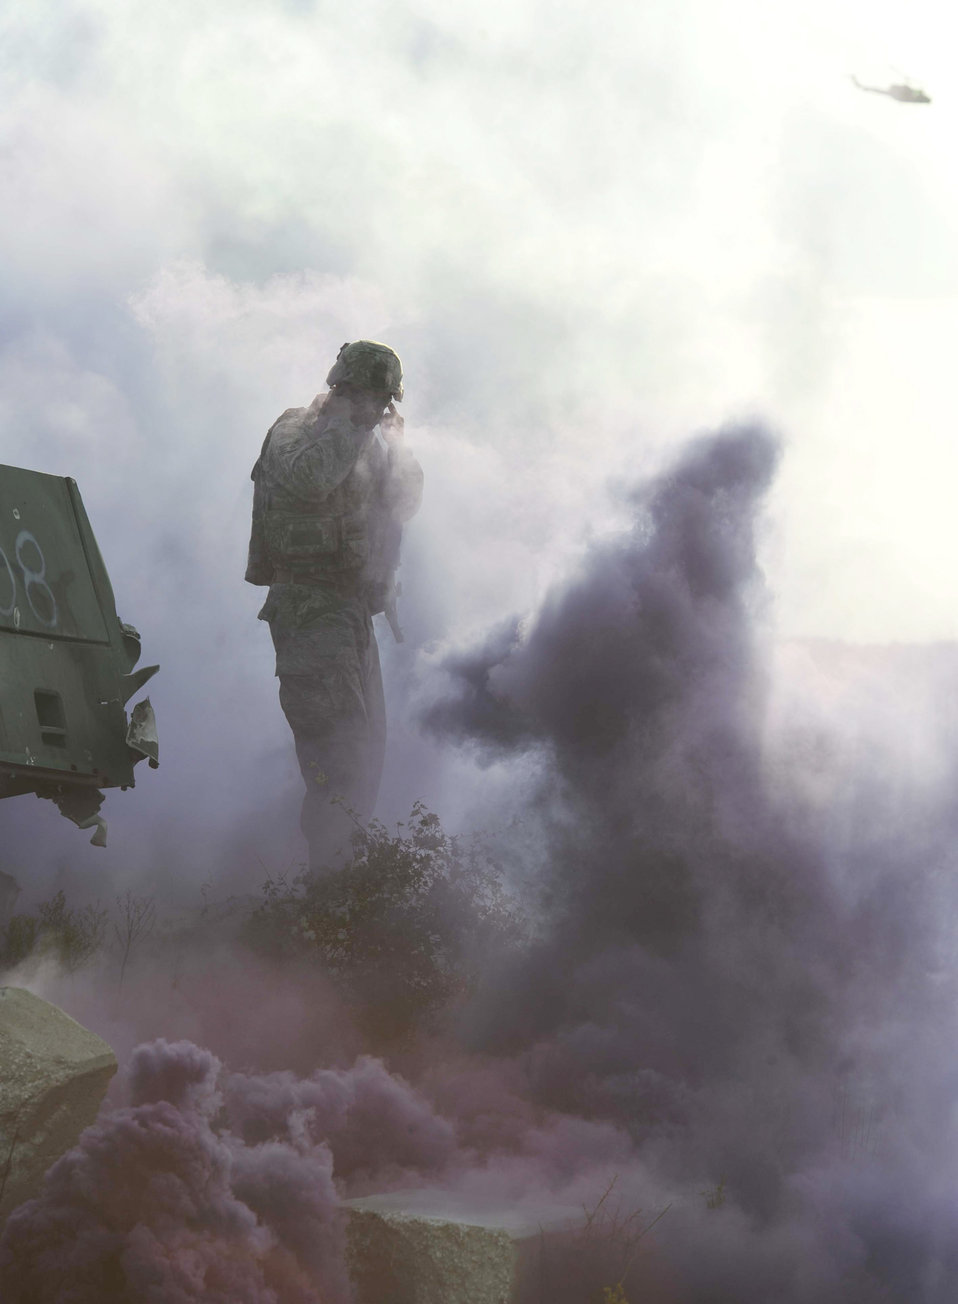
Atlantic Strike

Staff Sgt. Michaelson